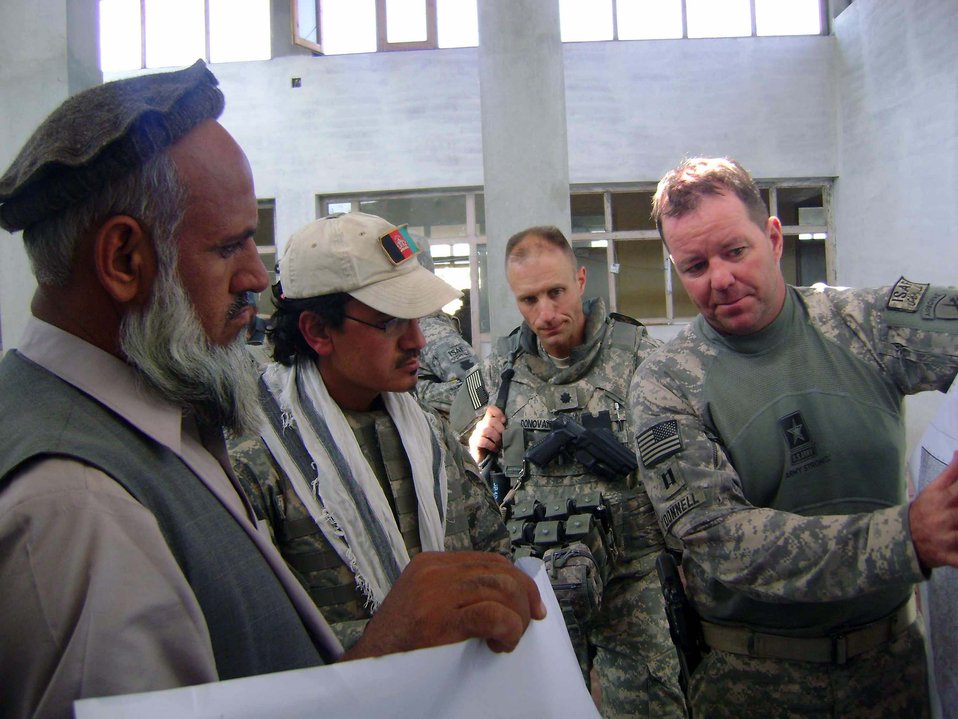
American servicemembers take reconstruction to new level

Army Capt. Timothy O'Donnell and Lt. Col. Paul Donovan discuss the placement of development projects in the Hisarek District Nov. 8 in the Nangarhar Province of Afghanistan. Both are part of the Nangarhar Provincial Reconstruction Team. The PRT is made up of Airmen and Soldiers from around the world and is charged with assisting the provincial government in improving security, governance and reconstruction. Colonel Donovan is the Nangarhar PRT commander.